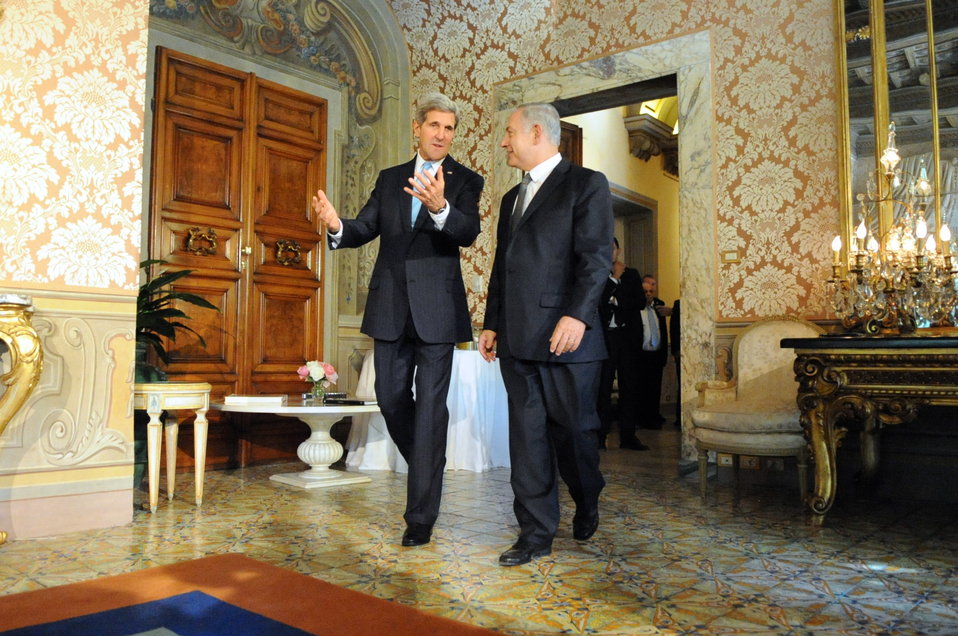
Secretary Kerry Meets With Israeli Prime Minister Netanyahu

U.S. Secretary of State John Kerry meets with Israeli Prime Minister Benjamin Netanyahu at the U.S. Ambassador's Residence in Rome, Italy on October 23, 2013.